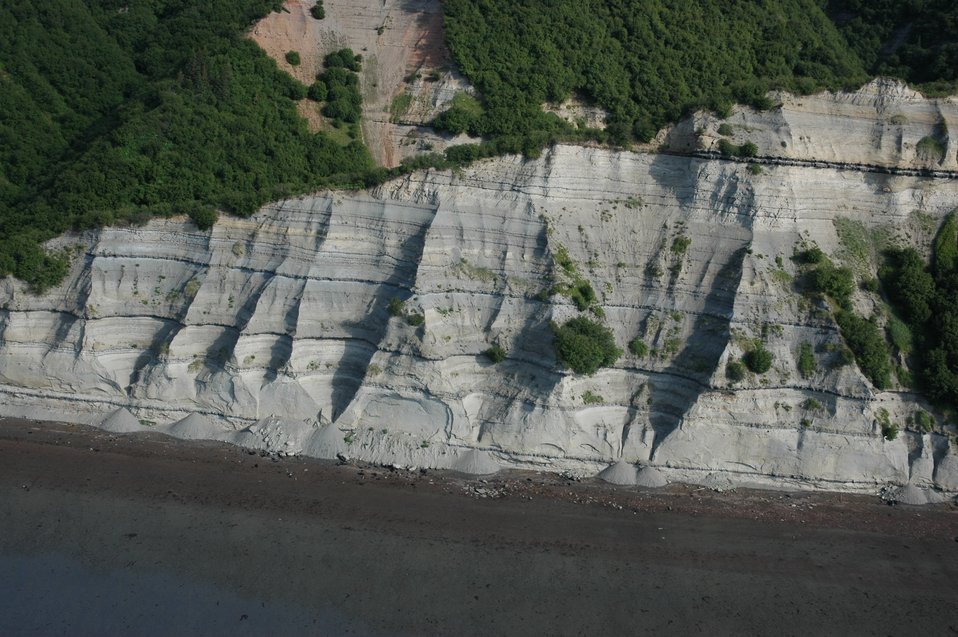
Aerial photograph. Stratified sedimentary layers in Kachemak Bay.